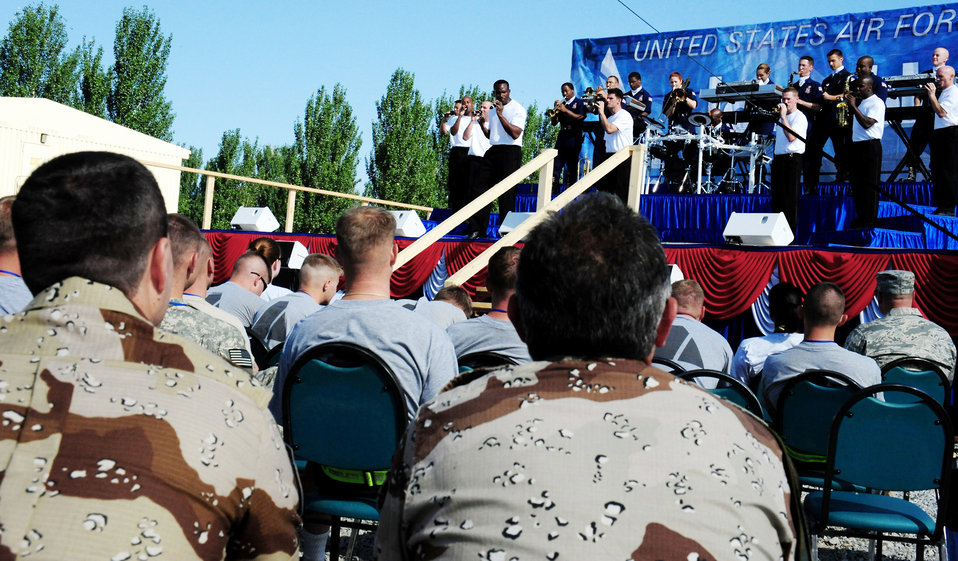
Tops In Blue entertain deployed forces in Kyrgyzstan

Tops In Blue vocalists perform for U.S. servicemembers and coalition forces during a 90-minute show July 10 at Manas Air Base, Kyrgyzstan.